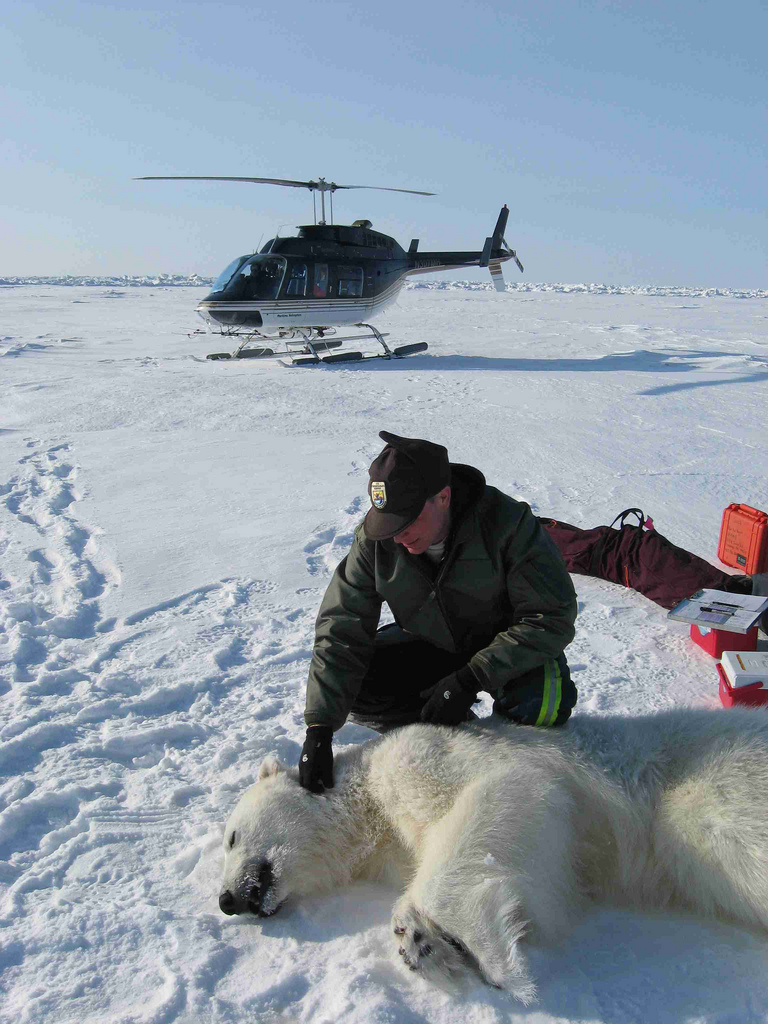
near Arctic National Wildlife Refuge, AK

A biologist examines a tranquilized polar bear.